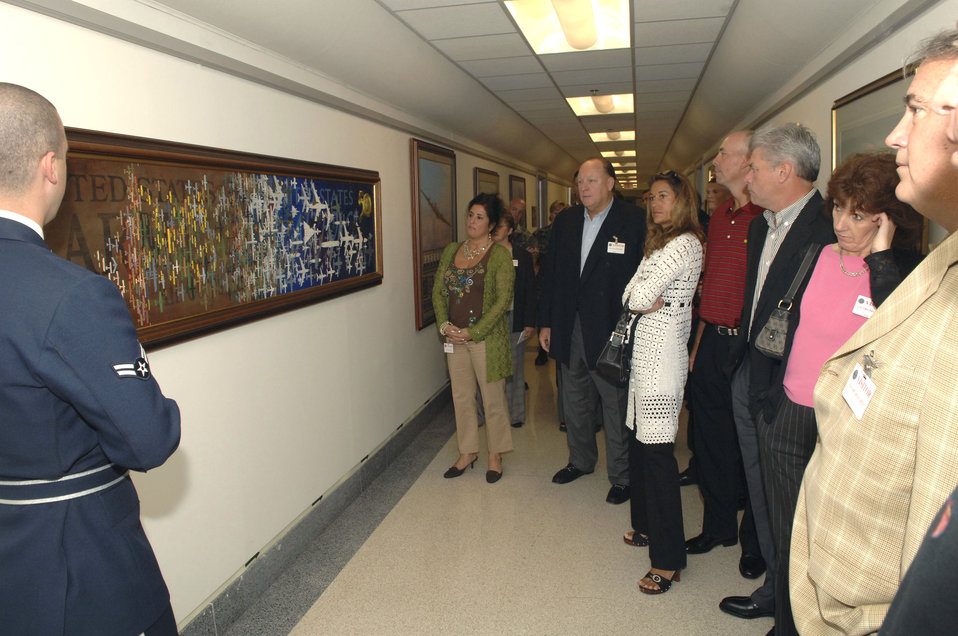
PGA champions visit Pentagon

A member of the U.S. Air Force Honor Guard briefs the U.S. Ryder Cup team about the history of the Air Force during their visit at the Pentagon Sept. 17.